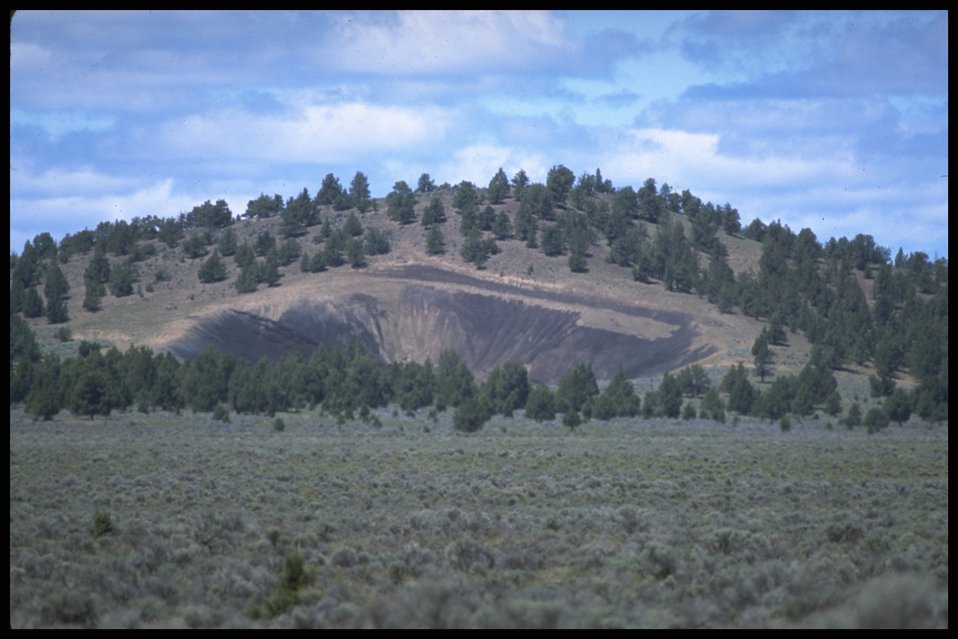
Scenic view of sink hole at Slide Mountain, Lakeview District.